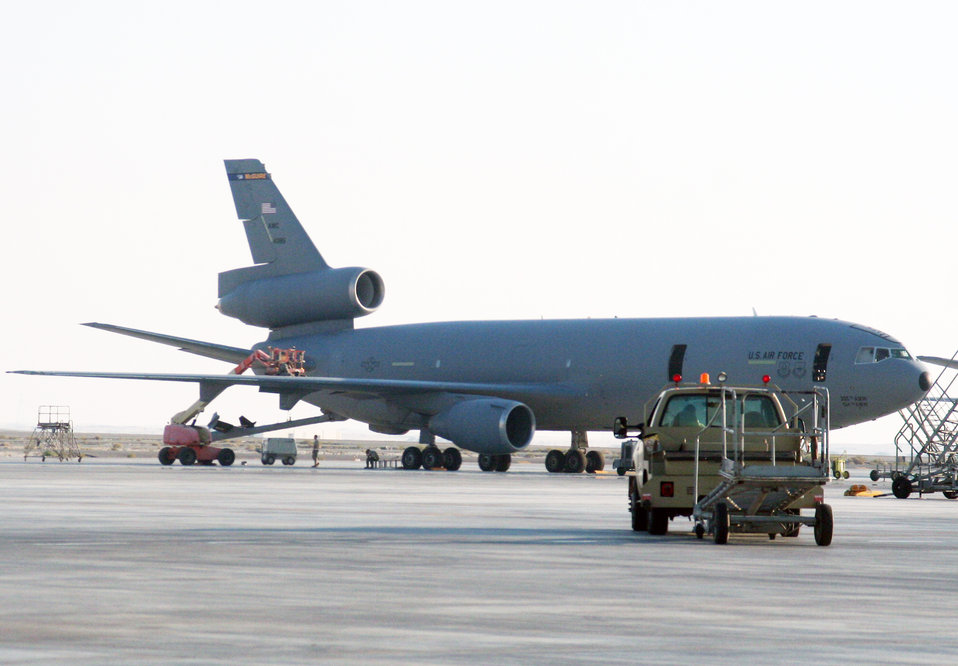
KC-10s keep aircraft flying in Southwest Asia

Maintenance Airmen work on a KC-10 Extender during operations at an air base in Southwest Asia Jan. 6, 2010.